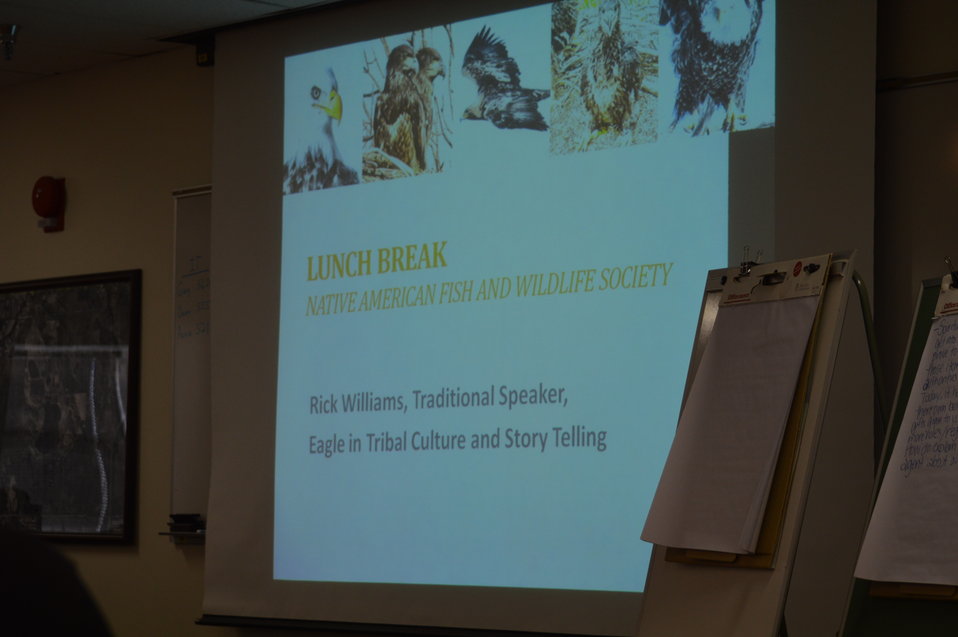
Eagle Summit III in Denver, Colorado on March 20, 2014 at the Rocky Mountain Arsenal National Wildlife Refuge.